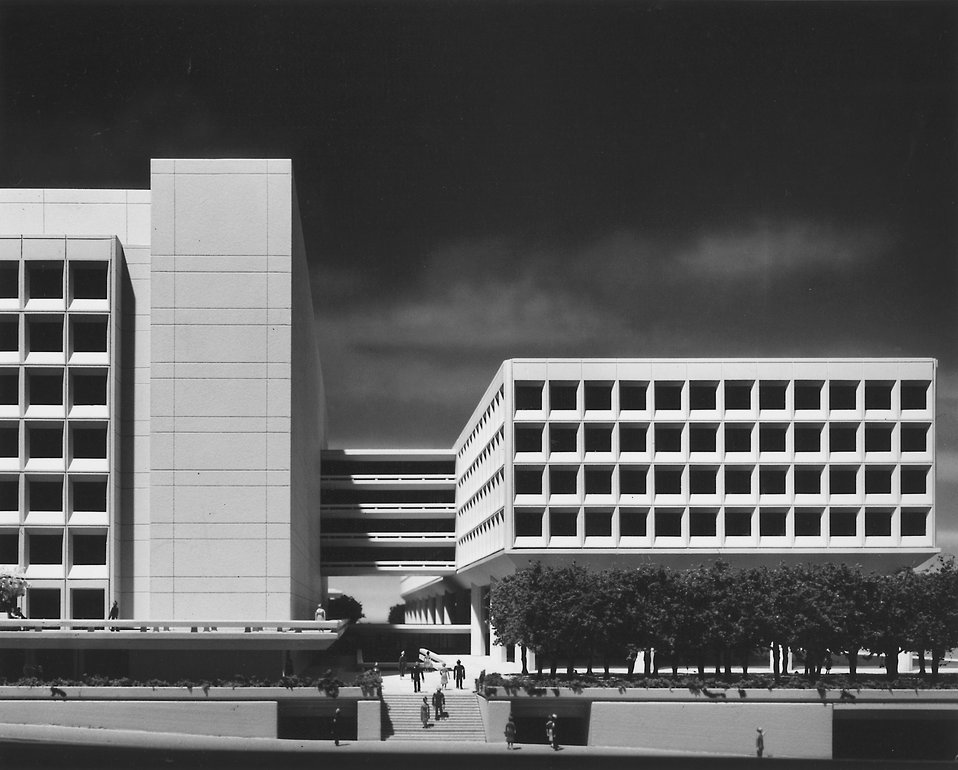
Federal Office building No. 5 Washington DC